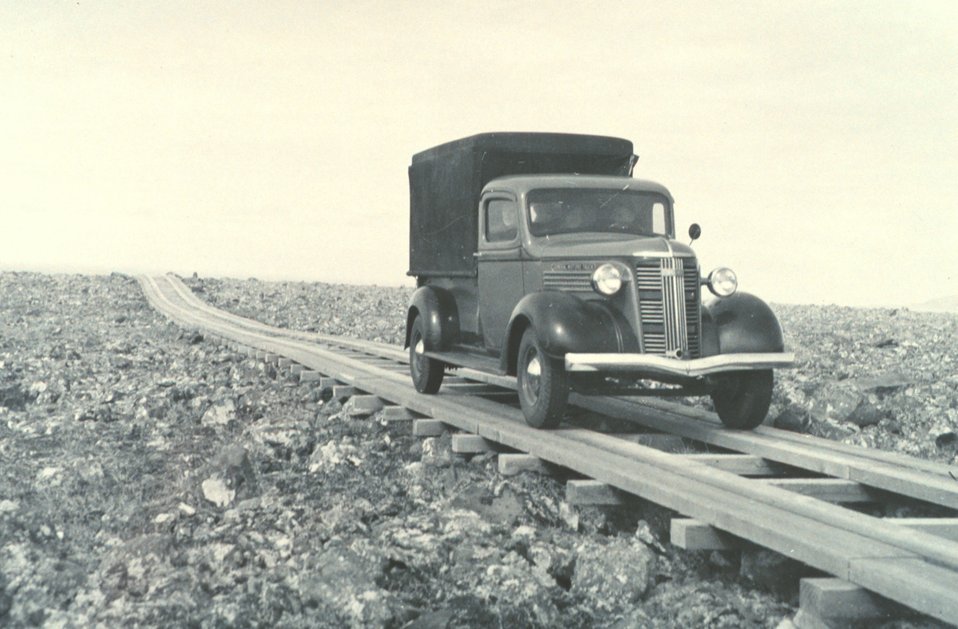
The plank road on St. George Island. F&WS 10,067.